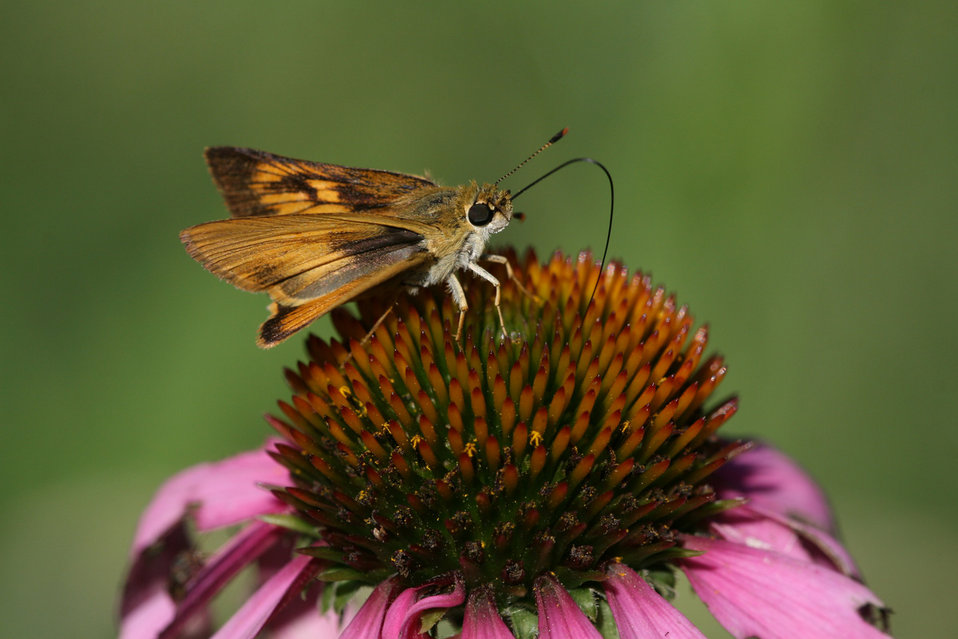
Skipper on Coneflower

Photographed at Green Lake National Fish Hatchery.